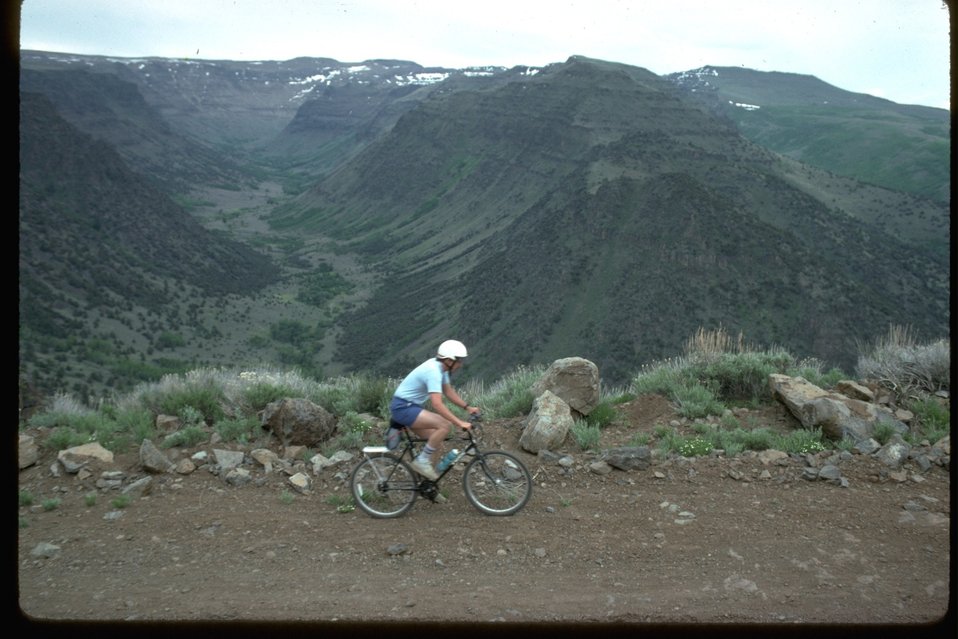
Mountain biking in the Rooster Comb area along Big Indian Gorge on Steens Mountain back country byway.